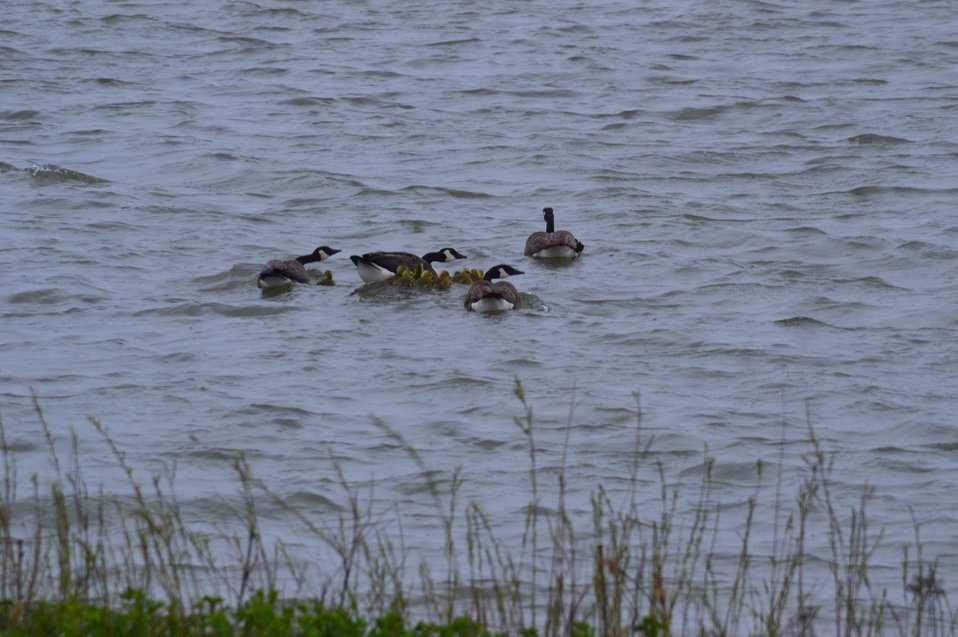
Canada geese and goslings

Scenery and wildlife and Audubon National Wildlife Refuge in North Dakota.